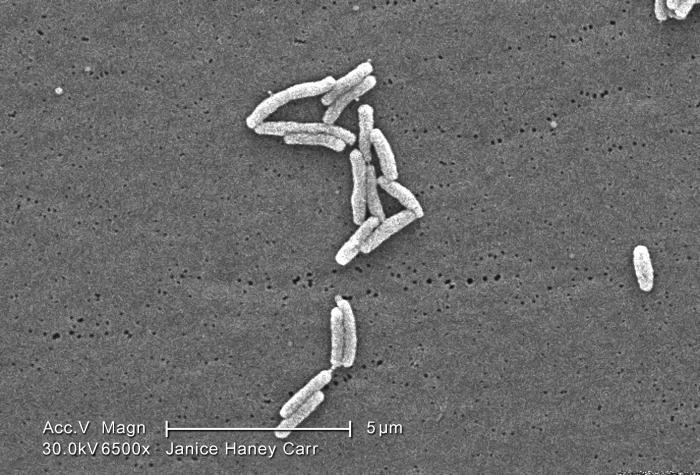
Under a moderately-high magnification of 6500X, this scanning electron micrograph (SEM) depicted a small grouping of Gram-negative Legionella pneumophila bacteria. Please see PHIL 11092 through 11152 for additional SEMs of these organisms, specifically PHIL 11126 for a colorized version of this image. It appears that a few are still joined to one another just prior to the completion of their reproductive process known as cell division. In some of these views you'll note the presence of flagellar appendages.